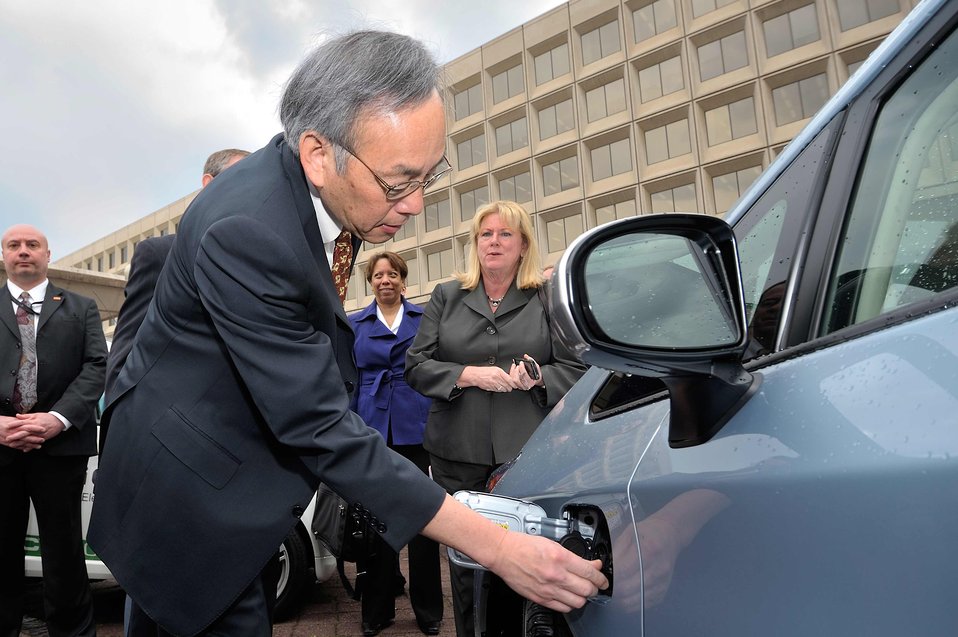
Electric Vehicles on Parade 1 of 5

US Secretary of Energy, Steven Chu, inspects the charging port of a Chevy Volt.